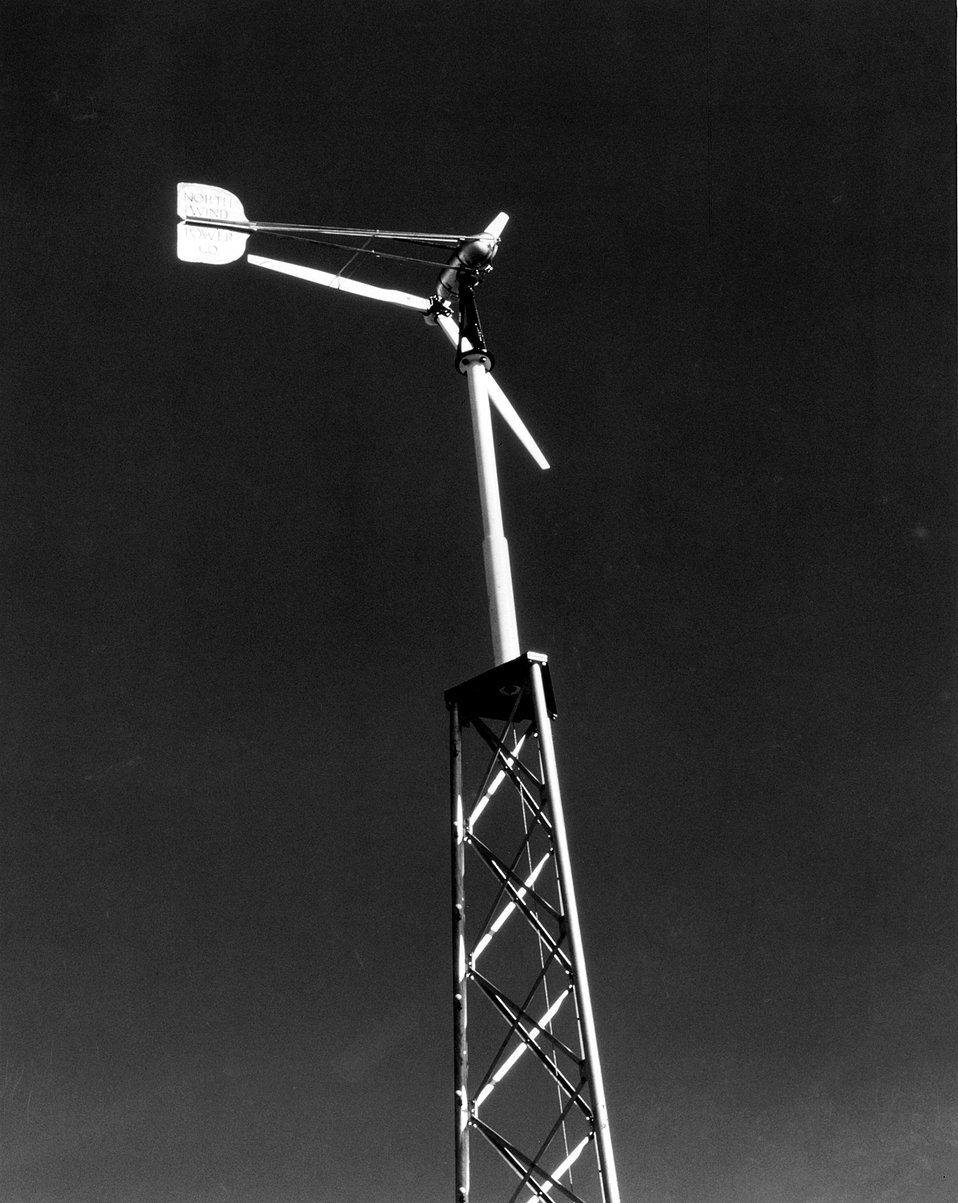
The Jacobs wind energy conversion system was popular in the 1930s, and rebuilding old Jacobs machines has become a popular activity in the 1970s among people looking for alternate energy resources for farms and rural buildings. c. 1977